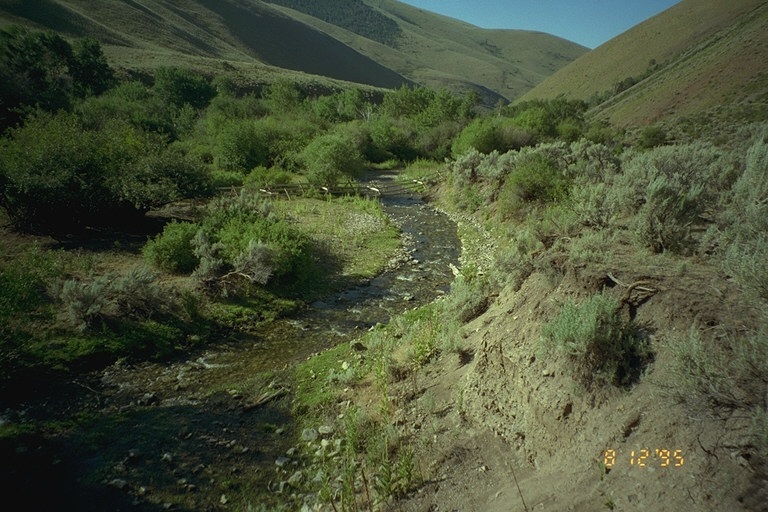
Riparian area Public Lands Salmon Field Office UCSC Upper Columbia Salmon Clearwater District